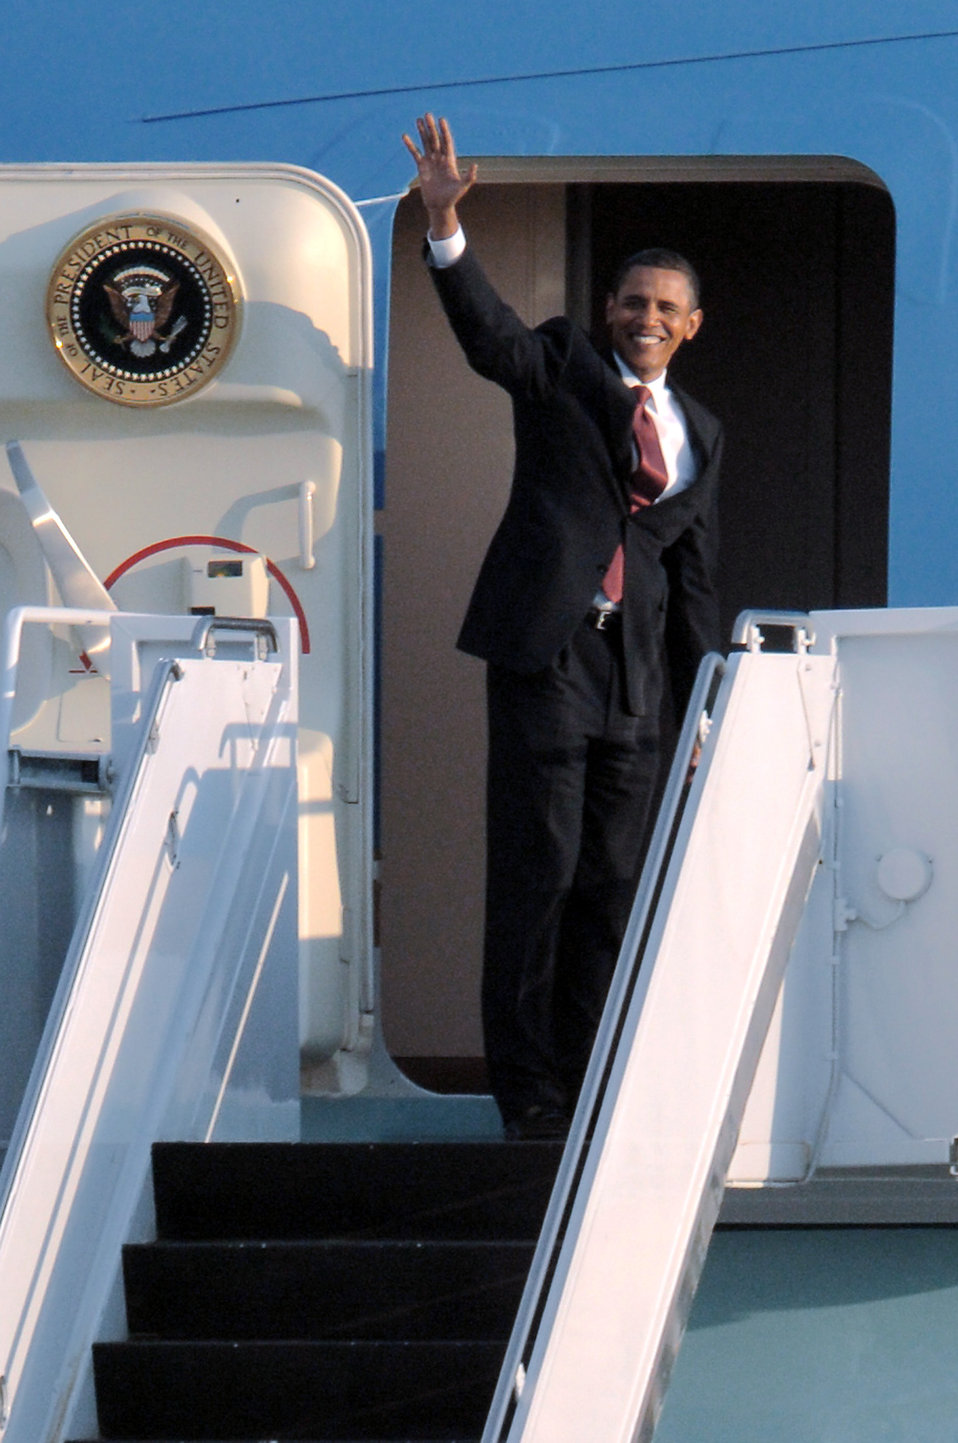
President makes stop at Ramstein Air Base

President Barack Obama waves to the crowd June 5 from Air Force One at Ramstein Air Base, Germany. He was visiting wounded U.S. servicemembers being treated at nearby Landstuhl Regional Medical Center, Germany.